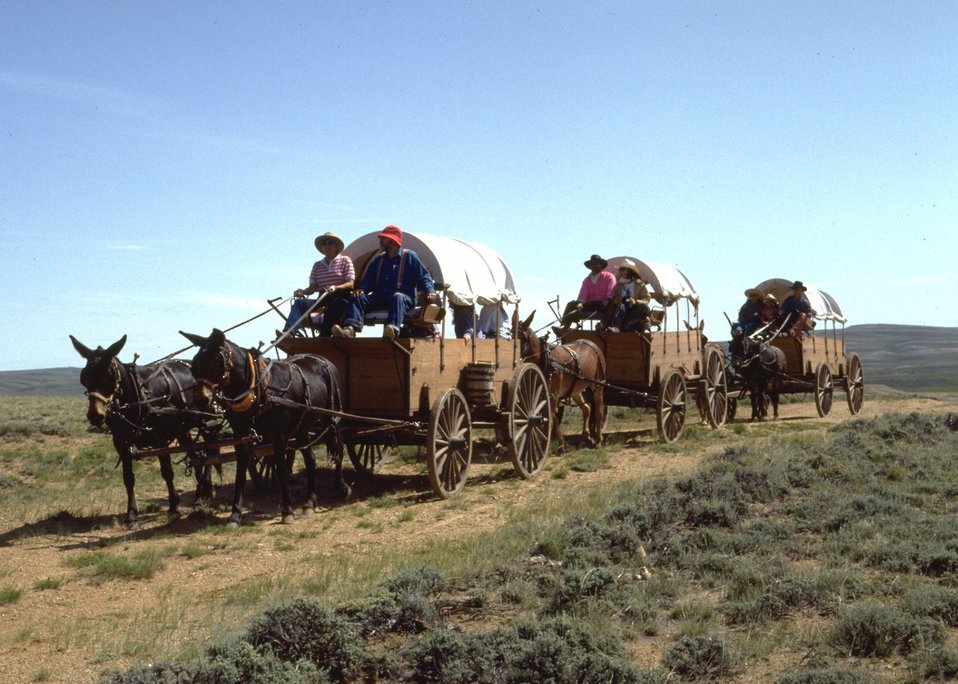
Wagon train on an unknown trail.